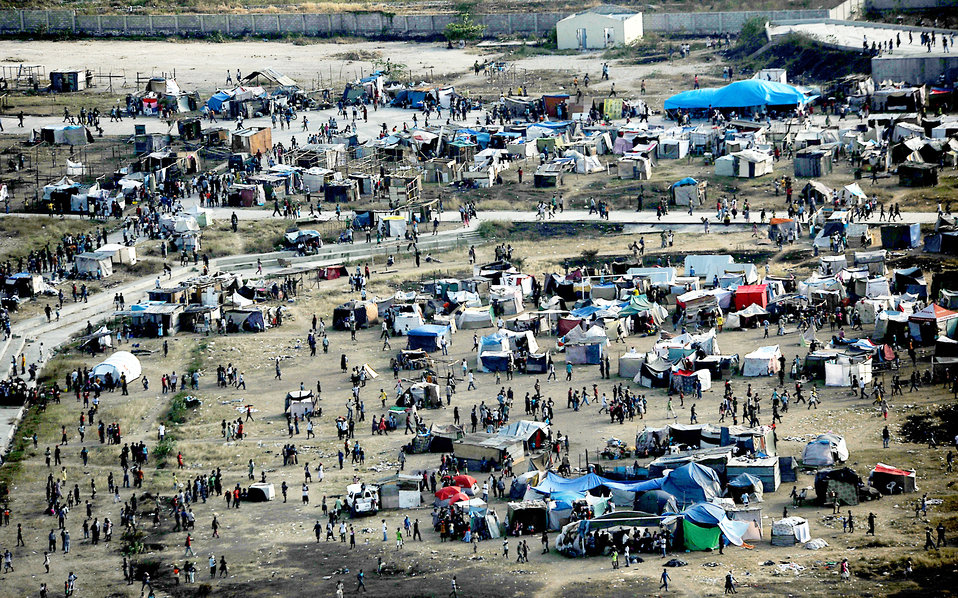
Joint team conducts drop zone survey

Makeshift shelters serve as homes for many as tents dot the open landscape in Port-au-Prince, Haiti, Jan. 24, 2010. The area was devastated by the earthquake that hit the country Jan. 12.